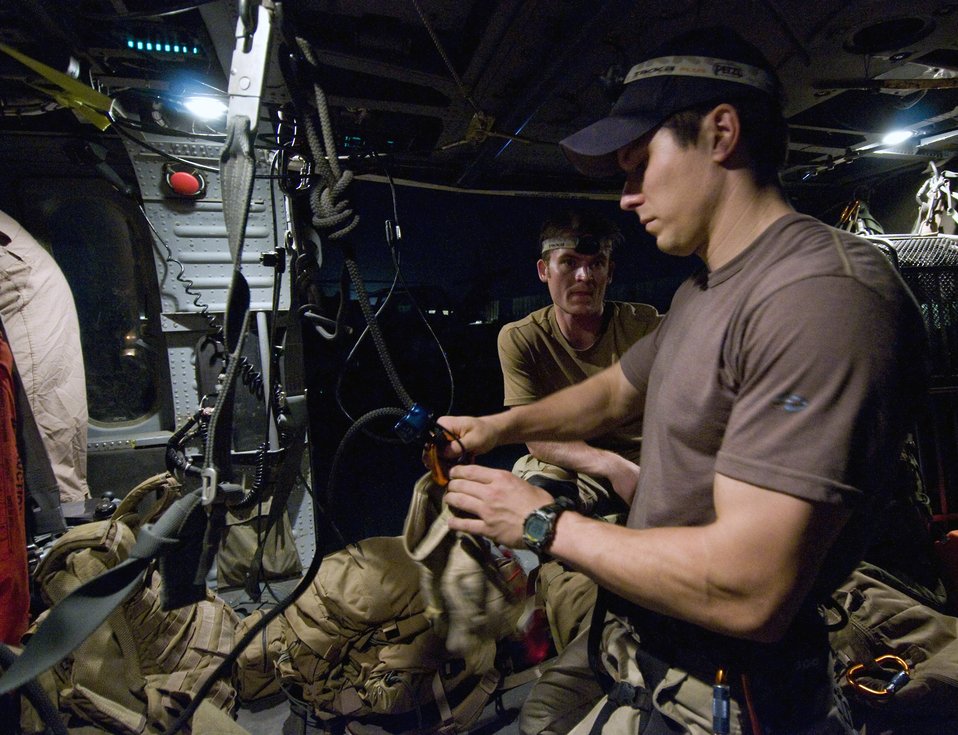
Nighttime operations

Capt. Brock Roden prepositions gear for flight in an HH-60G Pave Hawk July 17 at Bagram Air Base, Afghanistan. Captain Roden participated in a combat search and rescue exercise that night. Captain Roden is assigned to the of the 33rd Expeditionary Rescue Squadron deployed from Moody Air Force Base, Ga.